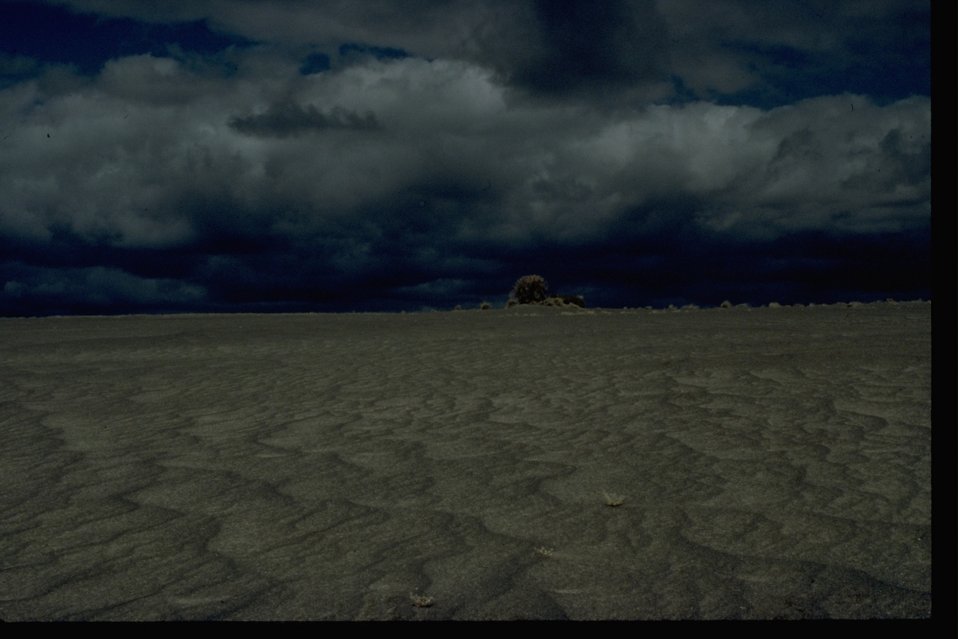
Alvord Desert Wilderness Study Area. OR 2-74